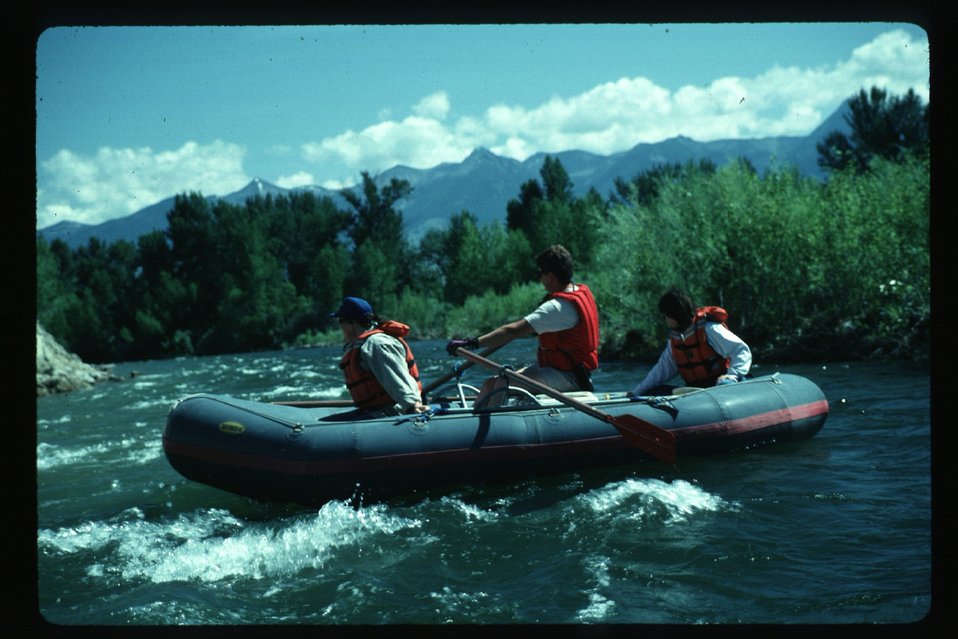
Rafting South Fork of Snake River Idaho Falls Field Office USRD Upper Snake River District